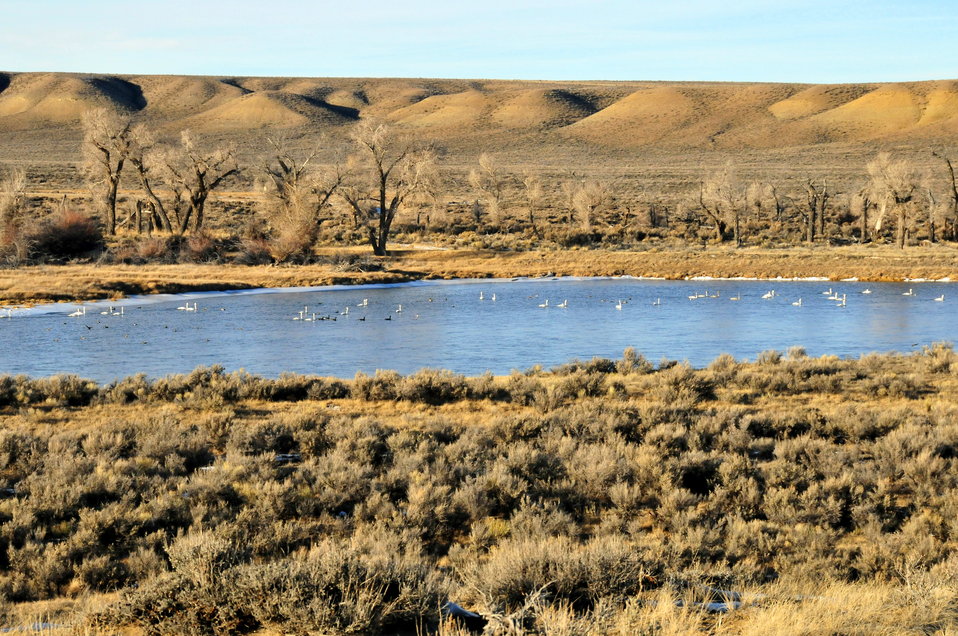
Trumpeter Swans wintering on the Green River on Seedskadee NWR

Trumpeter swans wintering on Seedskadee NWR have been increasing over the last decade. A high count of 304 in 2014. Open water below Fontenelle Dam, abundant submerged aquatic vegetation in the Green River, and reduced disturbance in the winter months provide the conditions needed for trumpeters in the winter months.